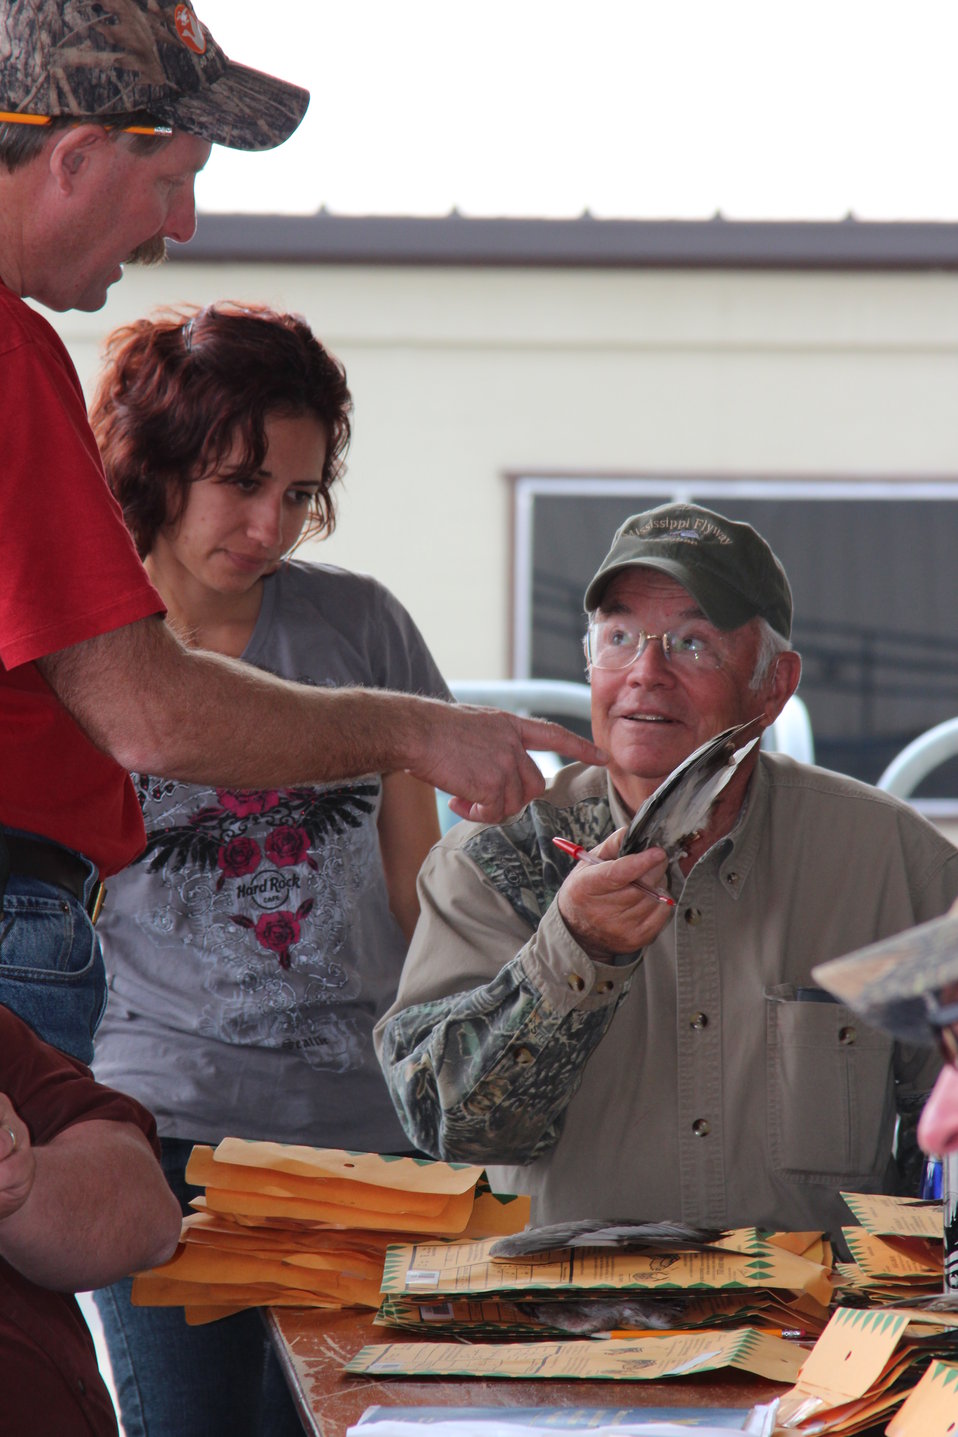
The WingBee brings people together

The WingBee not only allows the U.S. Fish & Wildlife Service to monitor duck and geese populations, it also provides biologists, birders and hunters a place to gather and share their knowledge.